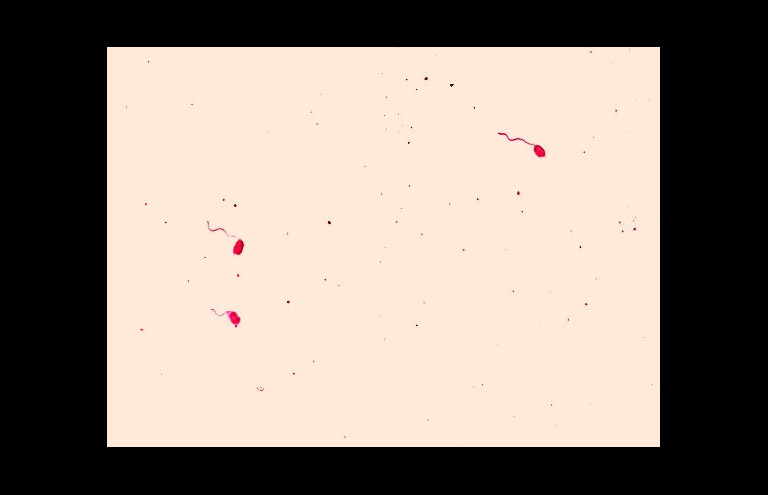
Aeromonas hydrophila. Leifson flagella stain (digitally colorized).